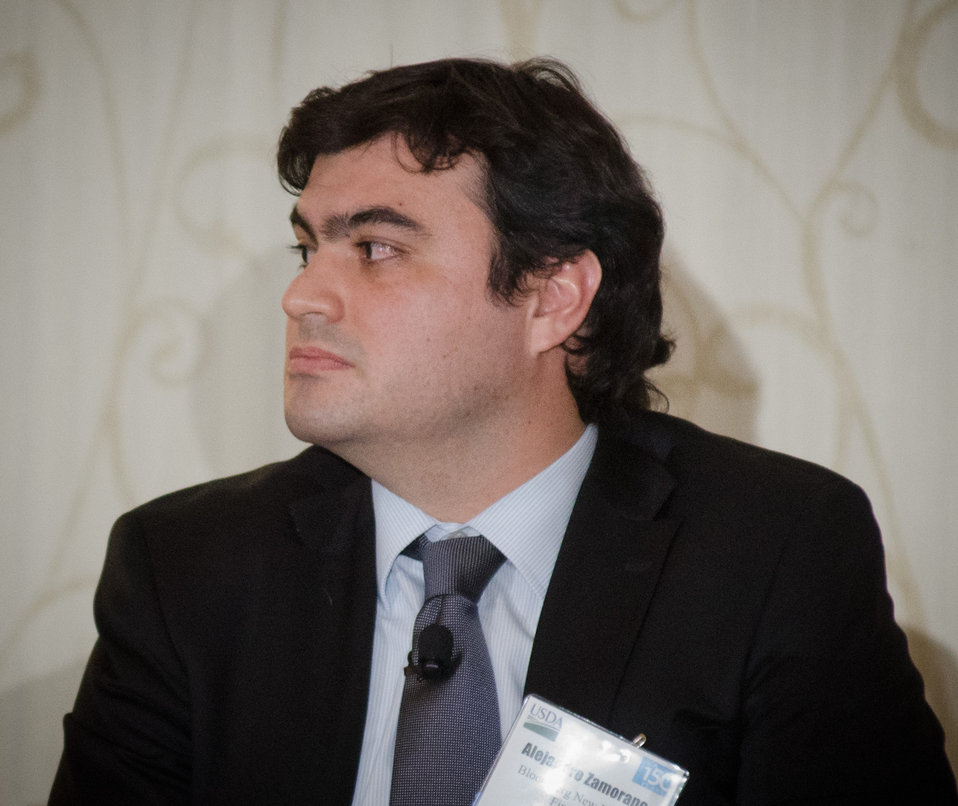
Bloomberg New Energy Finance Lead U.S. Bioenergy Analyst Alejandro Zamorano was a speaker at the Renewable Energy session on “Moving Renewable Energy Forward,” during the 2012 Agricultural Outlook Forum, “Moving Agriculture Forward, Growing, Innovating and Celebrating 150 Years” held at the Crystal Gateway Marriott Hotel in Arlington, Virginia, on Thursday, February 23, 2012. This year’s forum coincides with the 150th anniversary of the Department of Agriculture addressing economics, marketing, research, food safety, nutrition, conservation, rural development, alternative energy, trade and many other agricultural issues.